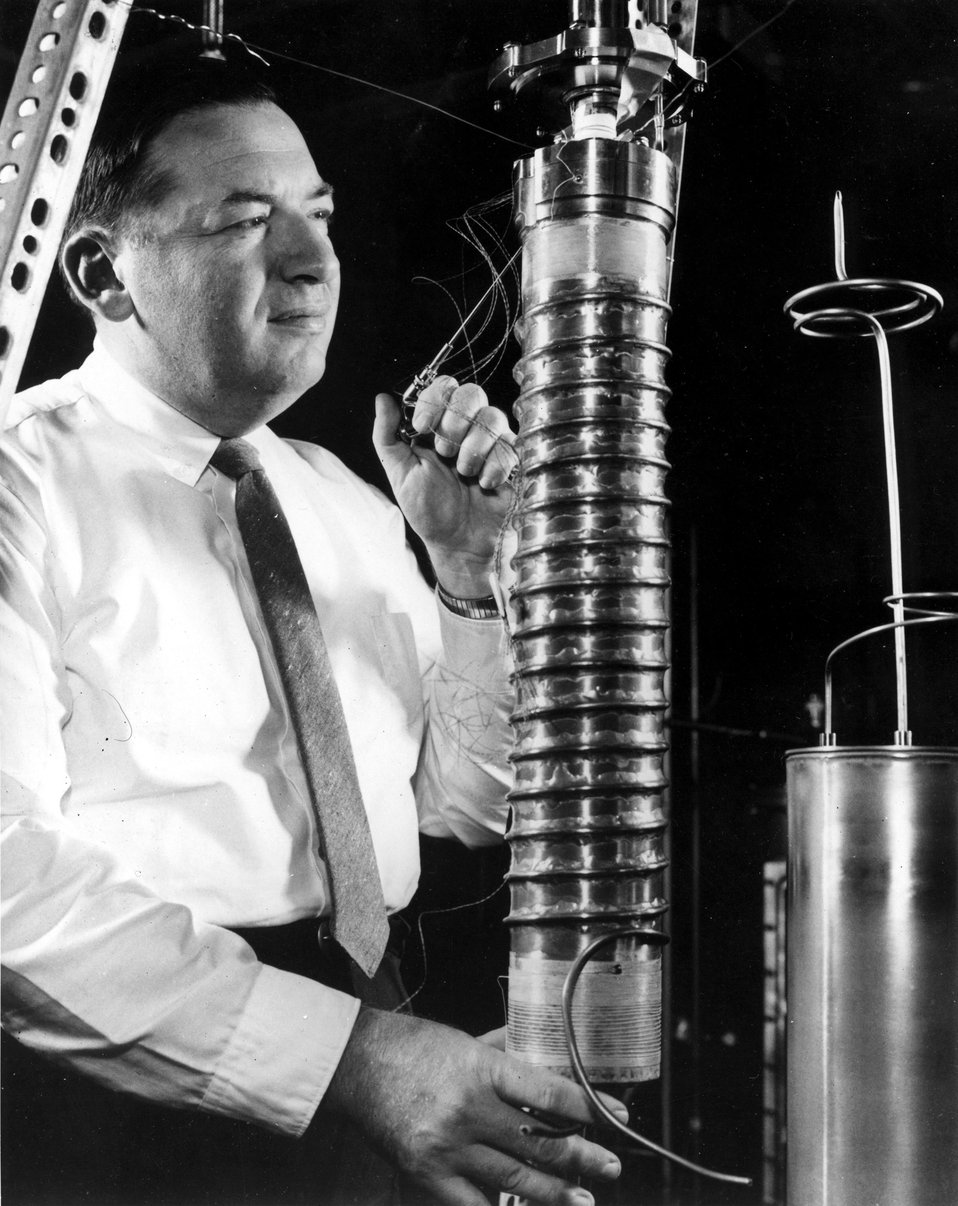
A chemist is using a crystal to measure the differences in vapor pressures between the isotopic varieties of a substance. c. 1967